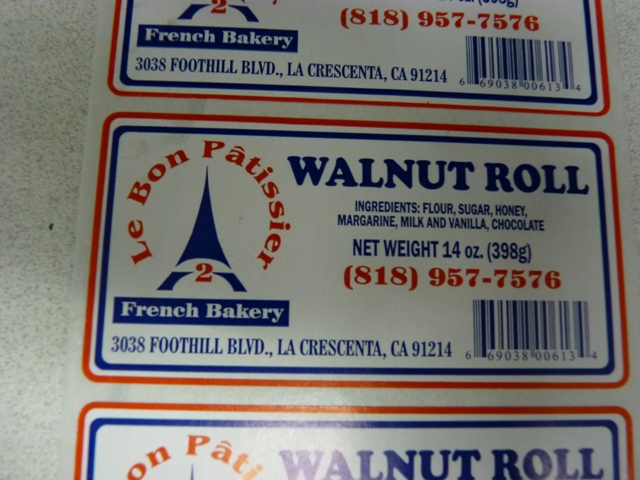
RECALLED - Pastry Products

April 5, 2011 – Product Recall – Le Bon Patissiere-2, Inc. Announces Voluntary Recall On Select Le Bon Patissiere Products That Contain Undeclared Allergens.